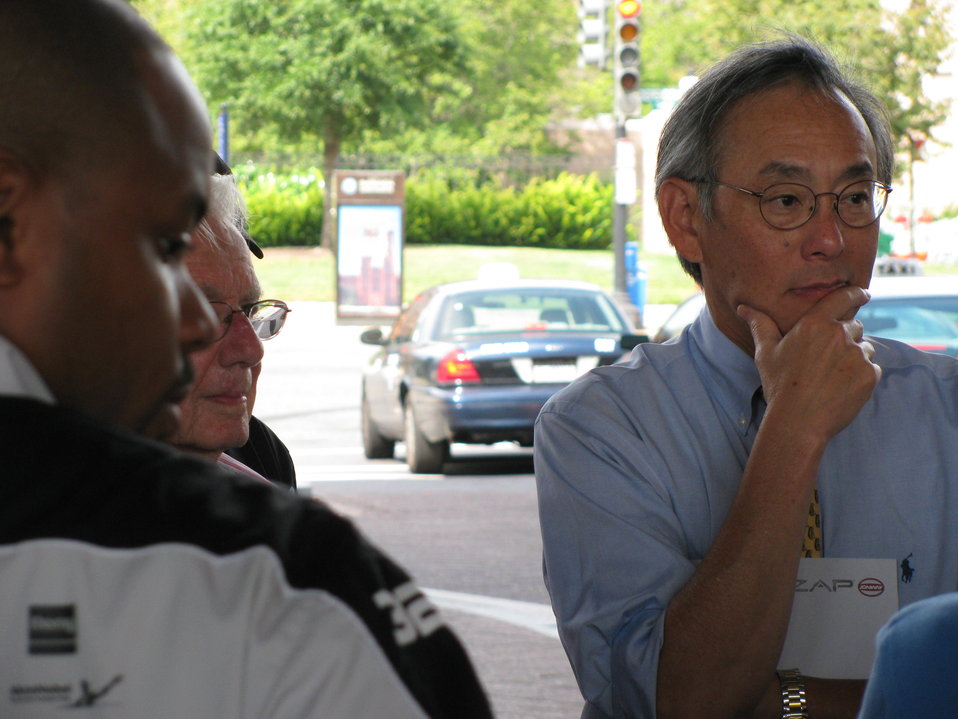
X Prize 062